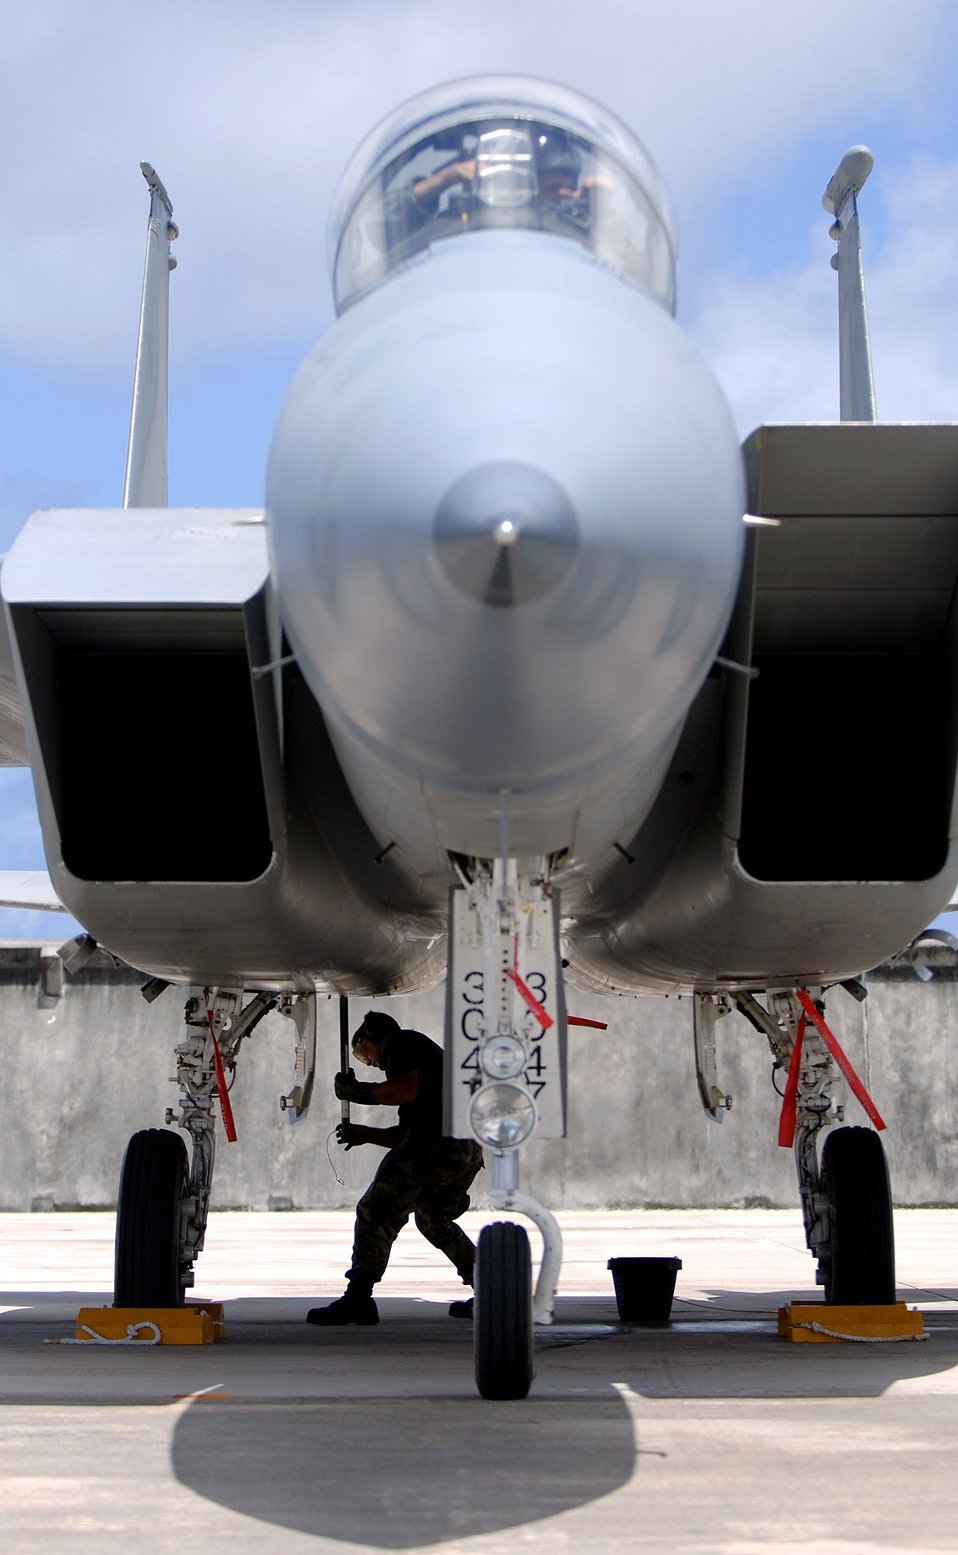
Valiant Shield kicks off

An F-15E Strike Eagle crew chief from Elmendorf Air Force Base, Alaska, parks the aircraft after a training sortie at Exercise Valiant Shield 2006 on Monday, June 19, at Andersen AFB, Guam. Valiant Shield, a U.S. Pacific Command exercise, runs June 19 to 23. It focuses on integrated joint training and interoperability among U.S. military forces while responding to a range of mission scenarios.